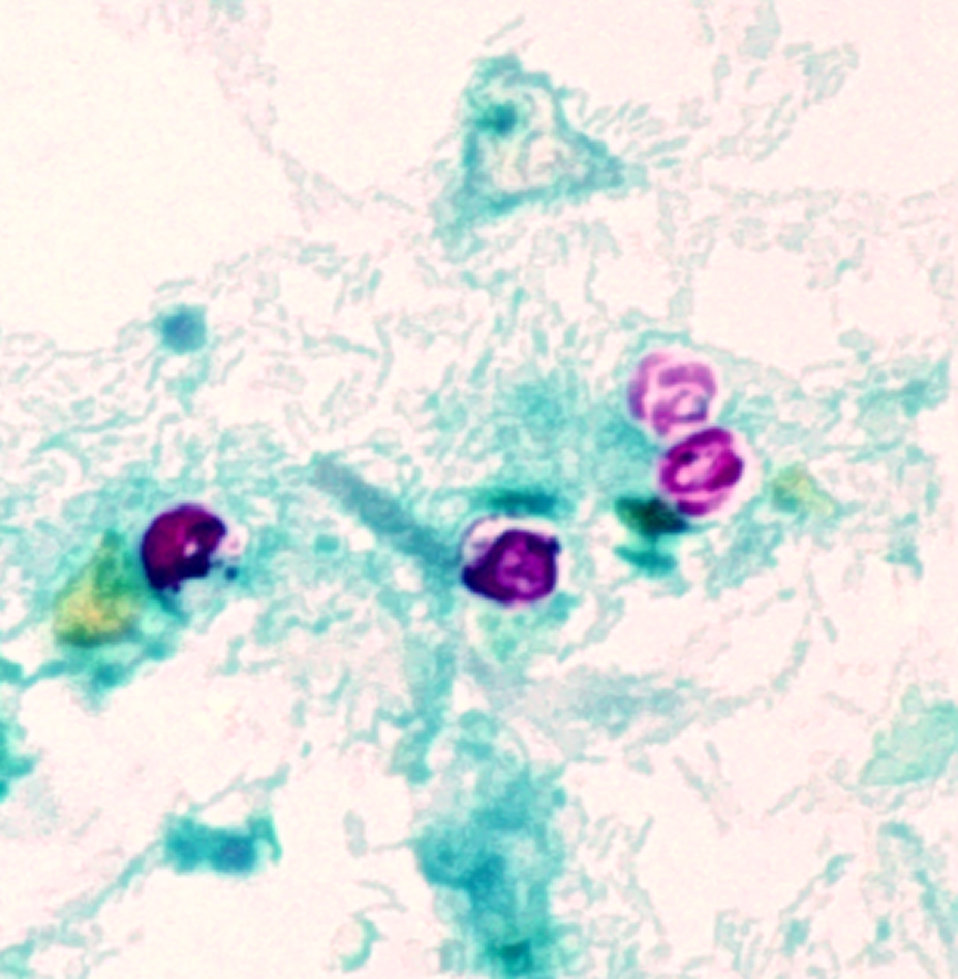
This photomicrograph revealed the morphologic details of Cryptosporidium parvum oocysts, i.e.,encapsulated zygotes, which had been stained using the modified acid-fast method. These oocysts exhibit a bright red coloration when using this staining technique, and in this case, you'll note the sporozoites that were made visible inside the two oocysts on the right. Sporozoites are the nucleated, motile stage of development through which many protozoans pass such as C. parvum, on their way to becoming adults, and represent a very infectious form of these organisms. The sporozoites will be released from these C. parvum oocysts.